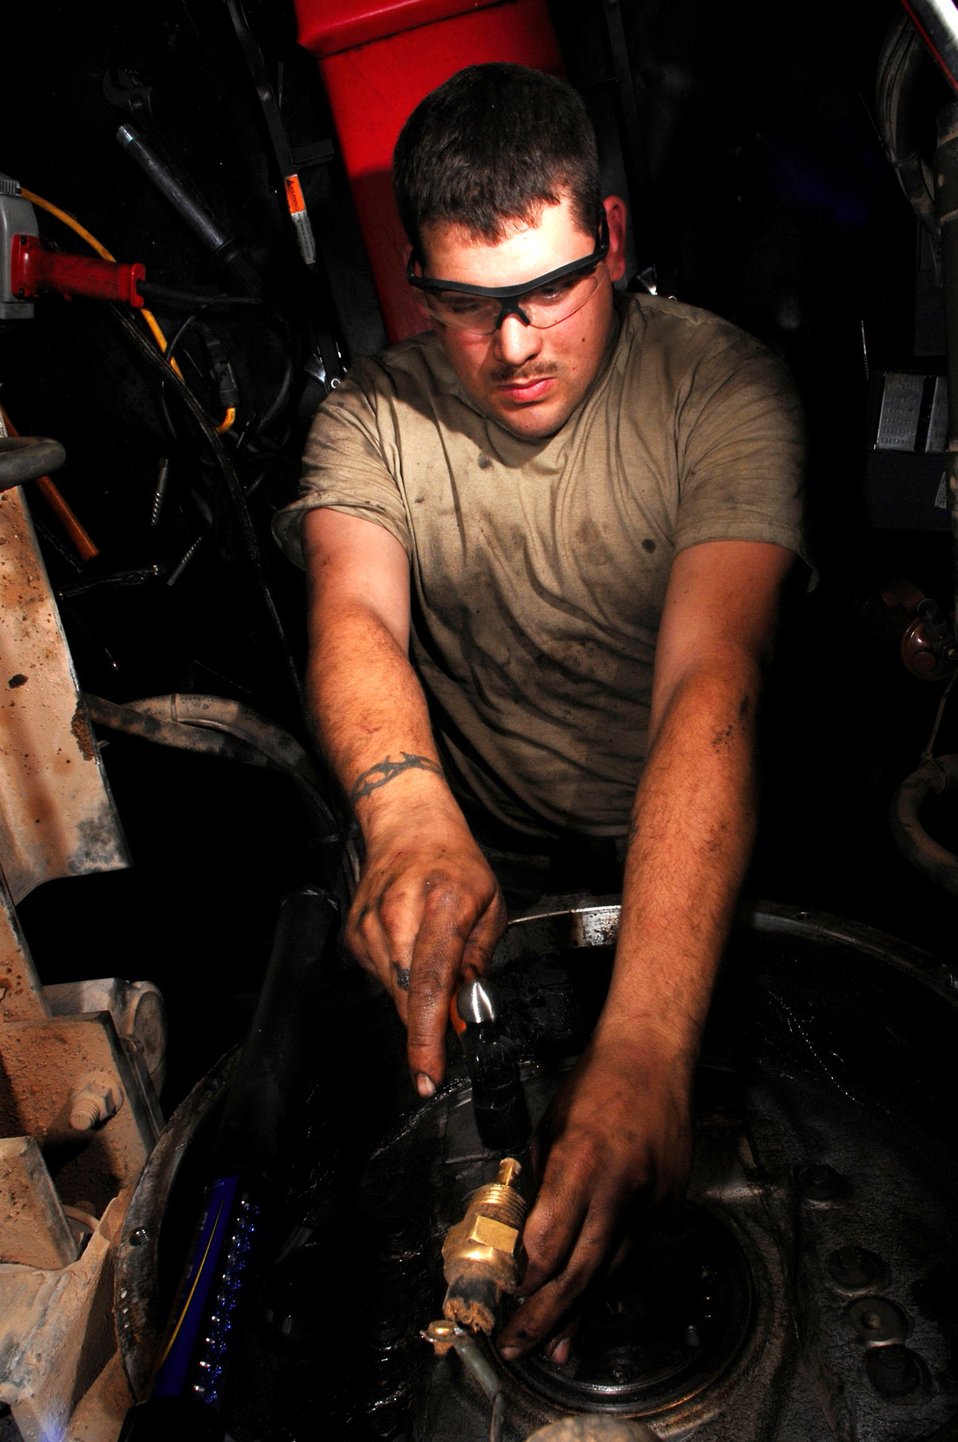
Keeping them rolling

Staff Sgt. Alex Blackburn extracts broken bolts from a fly wheel March 8 at Balad Air Base, Iraq. A fly wheel performs the task of starting the 8.2 liter engine on a refueling truck. Sergeant Blackburn, a 332nd Expeditionary Logistics Readiness Squadron refueling truck mechanic, is deployed from F.E. Warren Air Force Base, Wyo.